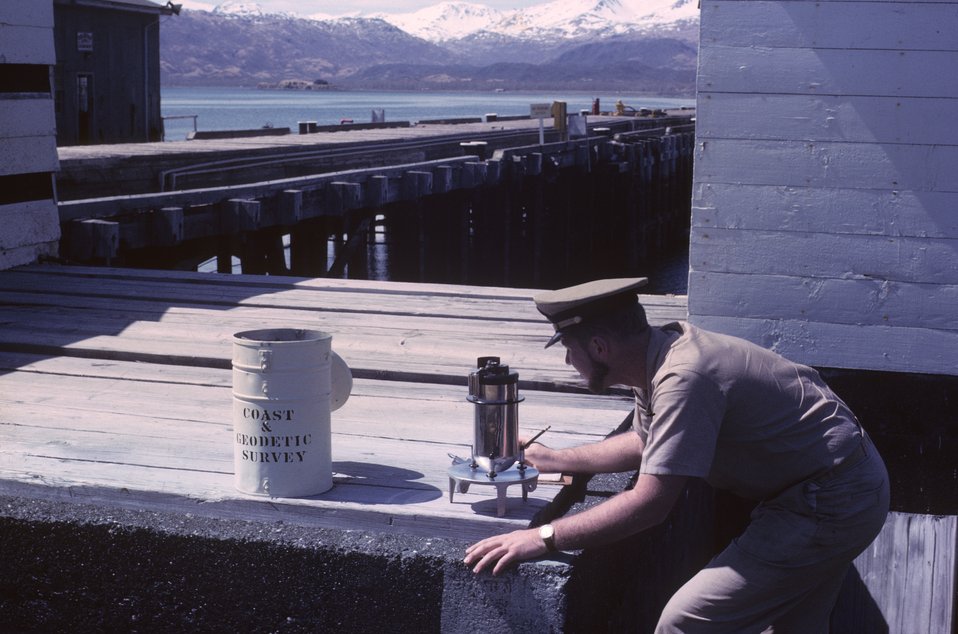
Operating a gravity meter.